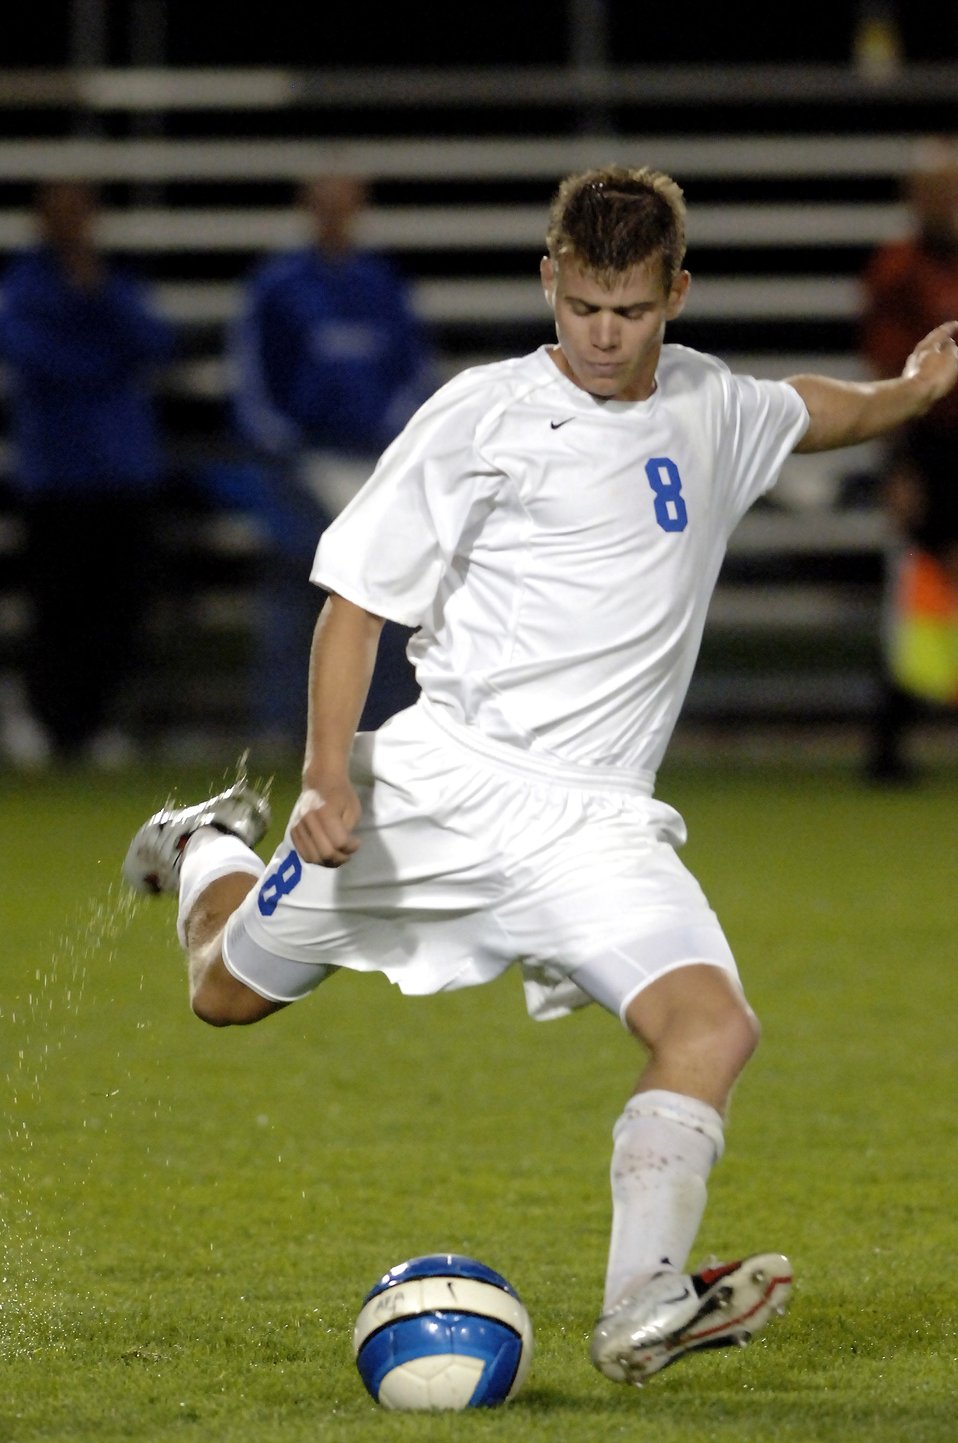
Academy soccer

Cadet 3rd Class Kevin Rosser passes the ball during a men's exhibition soccer match Aug. 25 against Metropolitan State College of Denver at the U.S. Air Force Academy in Colorado Springs, Colo.